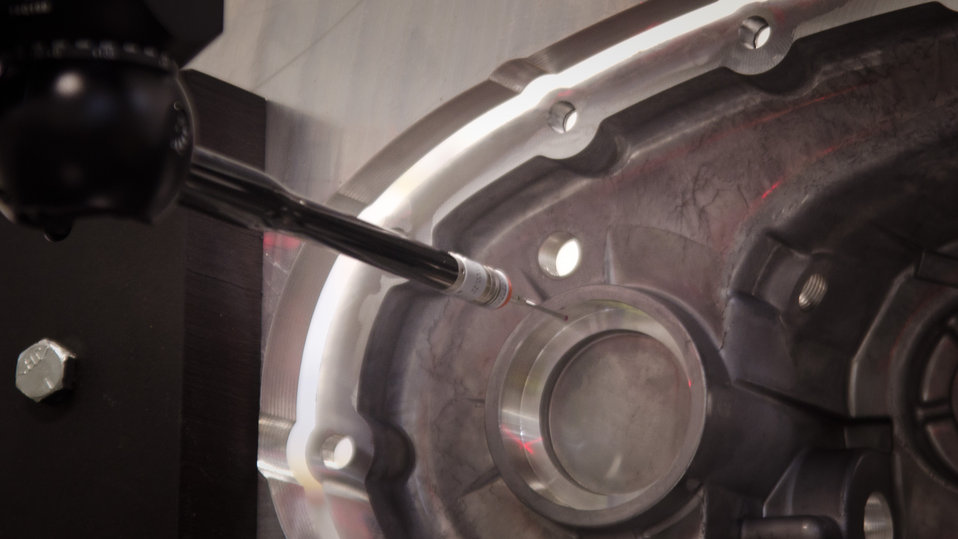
A robotic laser aligned device provides precision measurements across multiple surfaces of a cast and machined product made at Port City Group’s Port City Castings Corporation who manufactures high-pressure aluminum die-castings, mostly for the automotive industry, in Muskegon, MI, facility on Wednesday July 20, 2011. Port City Group boosted its employment by 12 percent over last year thanks to two Rural Business Guaranteed Loans totaling $9.6 million. In its 80,000 sq. ft. facility, machines that range from 800 – 1,600 tons, and cast A380 aluminum alloy products from melted ingots of aluminum, into automotive components of U.S.A. made vehicles. The process features a variety of robotic presses; computer controlled machining; quality control facility; and complete measurement and testing laboratory. In 2009 banks were backing out of loans for PCG equipment purchase agreements. The U.S. Department of Agriculture (USDA) loan guarantee helped make the loan possible with its guarantee. PCG obtained the needed robotic and other equipment. This resulted in a stable workforce that has since grown. When asked about their USDA experience, Port City Group Sales Manager Laura LaGuire said, “It was great! They were very helpful. Everything that came up was handled smoothly, the money came in place when it was needed, and it was a very smooth transition.”